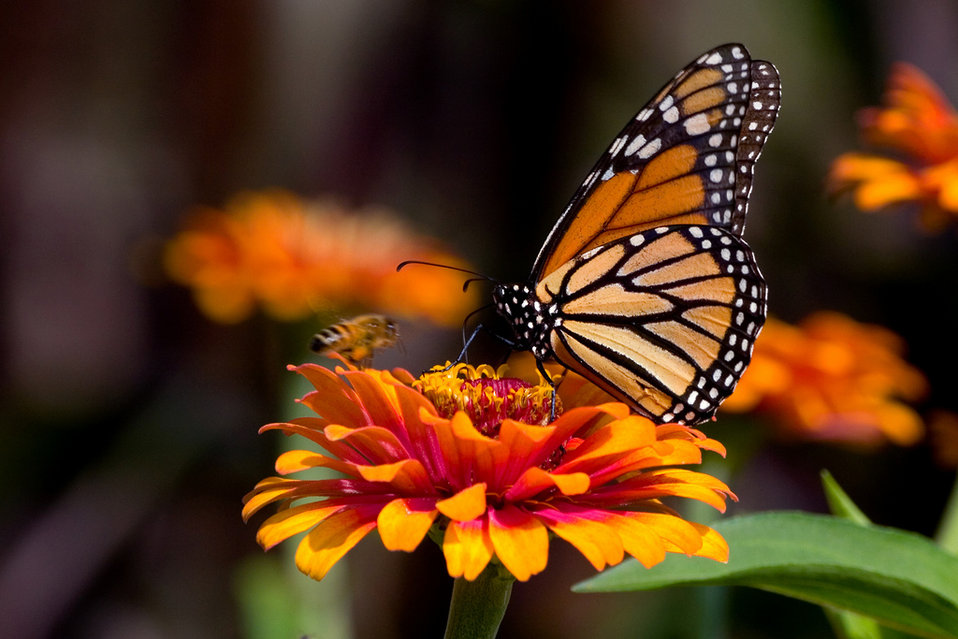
Bee Dreams

Uploaded for Flickr member fkafka1111.